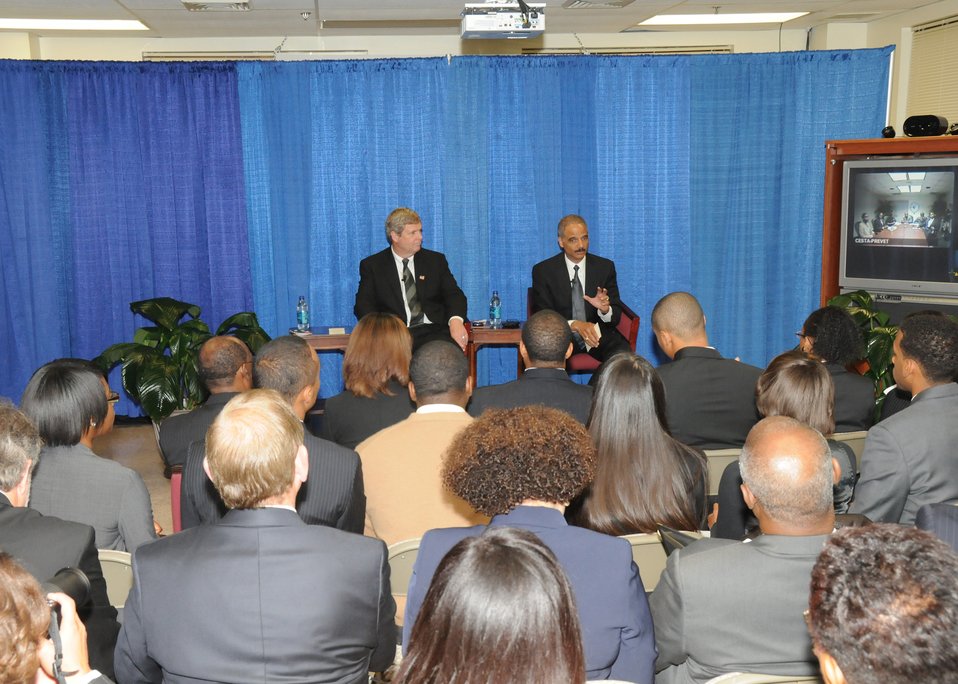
Agriculture Secretary Tom Vilsack and Attorney General Eric Holder hold a teleconference with 1890’s Land Grant Colleges and Universities at Alabama A & M University in Normal, AL., on Friday, May 21, 2010. Participating in the teleconference were Delaware State, Florida A & M, and Lincoln University of Missouri. USDA photo 10di1362-47.